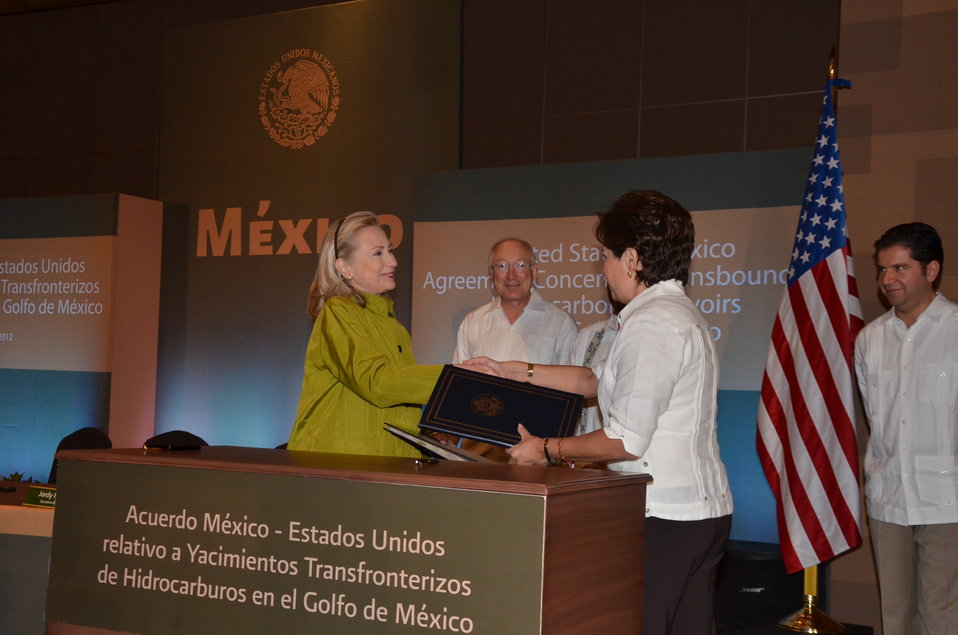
Secretary Clinton and Mexican Foreign Minister Espinosa Sign the U.S.-Mexico Agreement Concerning Transboundary Hydrocarbon Reservoirs in the Gulf of Mexico

U.S. Secretary of State Hillary Rodham Clinton and Mexican Foreign Minister Patricia Espinosa shake hands after signing the U.S.-Mexico Agreement Concerning Transboundary Hydrocarbon Reservoirs in the Gulf of Mexico, in Los Cabos, Mexico, on February 20, 2012. Also pictured in the photo, left to right, are: U.S. Interior Secretary Ken Salazar, Mexican President Felipe Calderon, and Mexican Secretary of Energy Jordy Herrera.